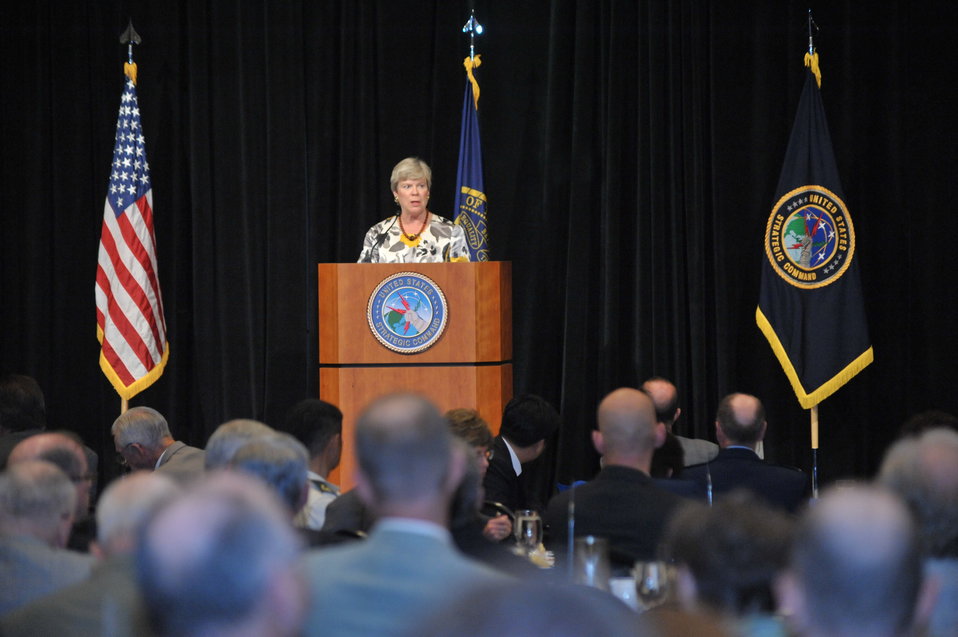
Assistant Secretary Gottemoeller Delivers Remarks on 21st Century Deterrence Challenges

Assistant Secretary of State Rose Gottemoeller delivers remarks on 21st Century Deterrence Challenges at the U.S. Strategic Command 2011 Deterrence Symposium in Omaha, Nebraska, on August 4, 2011.